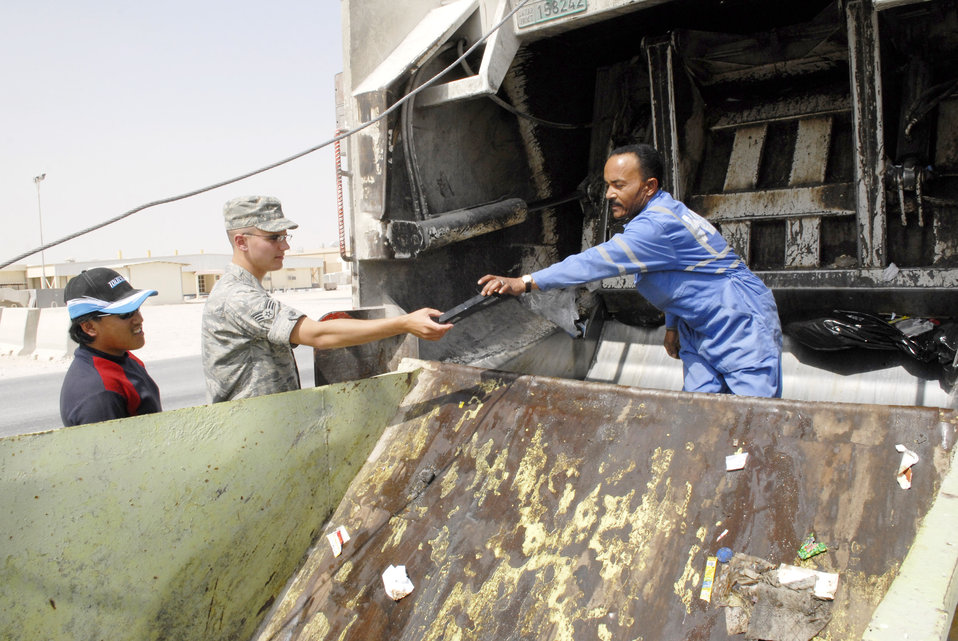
Escort flight Airmen vigilant for threats

Senior Airman Thaddeus Kloss checks and collects items that look sensitive in nature during a trash pickup Feb. 26 at an air base in Southwest Asia. Airman Kloss performs an overwatch of off-base contract workers ensuring the security of the area and the safety of servicemembers on the base. Airman Kloss is a 379th Expeditionary Civil Engineer Squadron third country national escort. He hails from Brunswick, Maine, and is deployed from Spangdahlem Air Base, Germany.